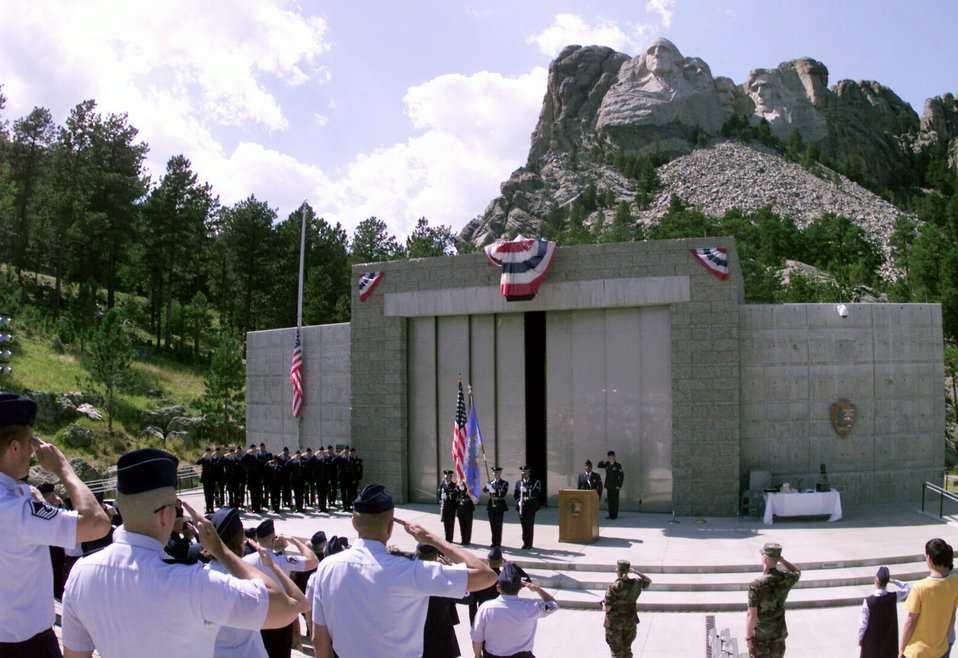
Among presidents

KEYSTONE, S.D. -- Airman attending the leadership school at nearby Ellsworth Air Force Base had a special graduation ceremony July 30. Instead of holding the ceremony in the base club, as is traditionally done, the group received their graduation certificates in the shadow of Mount Rushmore. Airman leadership school comprises 24 academic days where topics including the profession of arms, leadership and communication are covered.